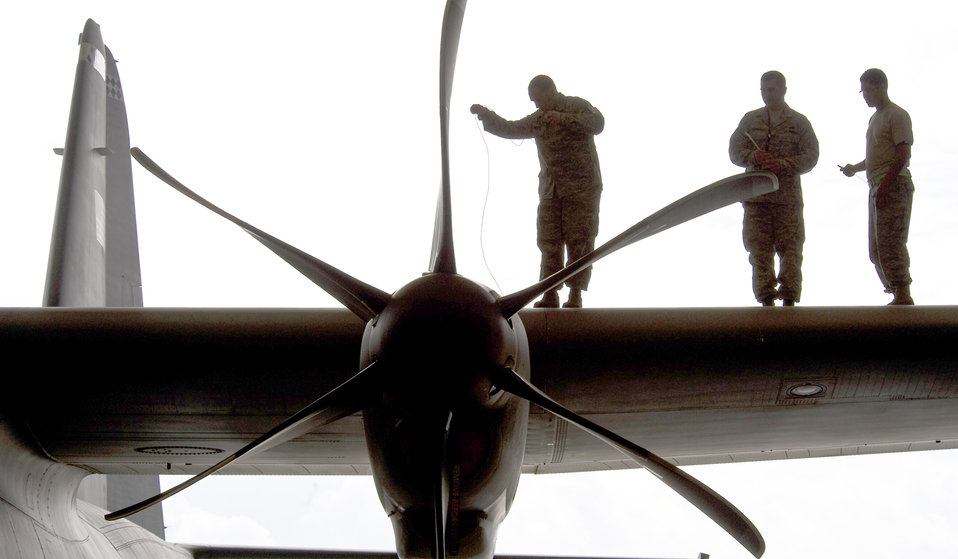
Walking the wing

Members of the 86th Maintenance Squadron perform an isochronal inspection on a C-130J Super Hercules Sept. 9, 2010, at Ramstein Air Base, Germany. A 10-day ISO inspection, much like a tune-up for the aircraft, is performed every 420 days.